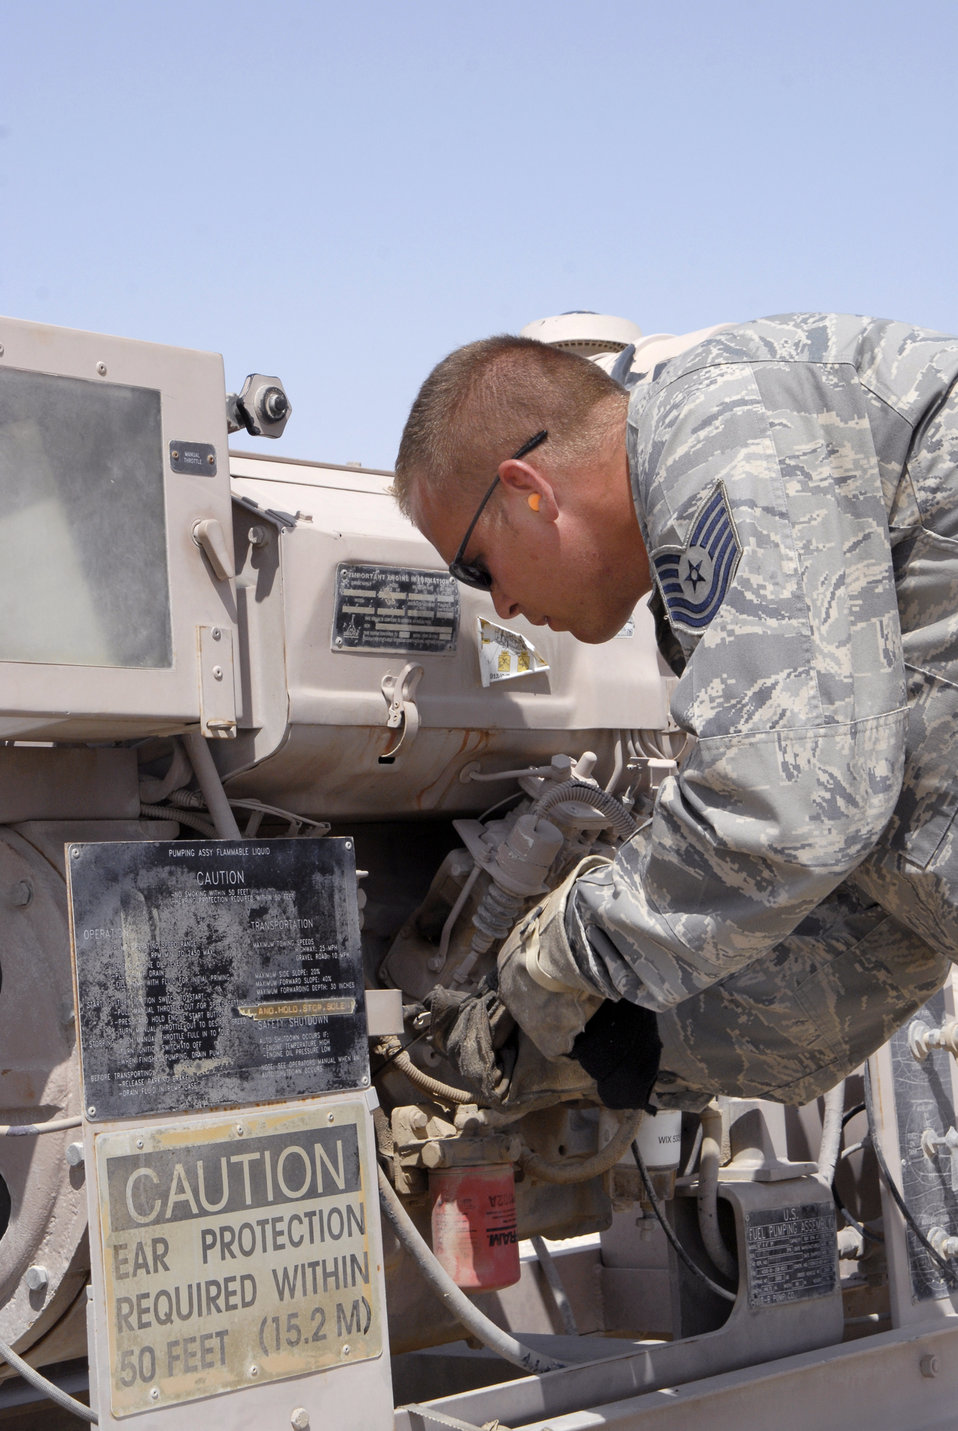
Fueling the way to mission success

Tech. Sgt. Raymond Carpenter performs routine maintenance on an R-22 fuel pump in the bulk expeditionary receiving transportation holding area April 10 at an air base in Southwest Asia. Fuel stored here is distributed to various locations around the base where needed to ensure mission success. Sergeant Carpenter, a fuels bulk storage supervisor with the 379th Expeditionary Logistics Readiness Squadron, hails from Princeton, Idaho, and is deployed from Ellsworth Air Force Base, S.D.